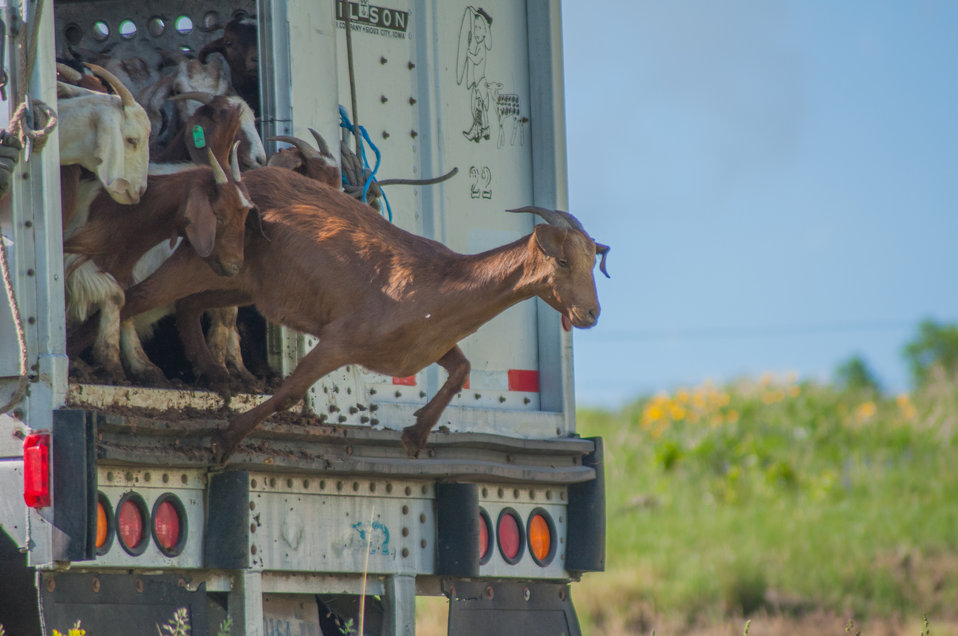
Goat landing on Bozeman Fish Technology Center

On June 8 at 5:00 p.m., 409 yearling domestic goats were off-loaded on the Bozeman Fish Technology Center (BFTC) campus. Thus begins a 3-4 year project of monitored targeted grazing and applications of friendly insects to control noxious weeds and manage brush overgrowth on property of the U.S. Fish and Wildlife Service BFTC.

Purposes of this effort are to reduce the presence of undesirable vegetation, promote restoration of native plants, and assist with fire protection by reducing burnable plant biomass.

The cooperative venture involves the U.S. Fish and Wildlife Service, Montana Outdoor Science School, Friends of the Bozeman Fish Technology Center, Gallatin Valley Land Trust, U.S. Forest Service, and Prescriptive Livestock Services. Integrated Weed Control is supplying the insects as an in-kind contribution to the project, and has applied insects on the BFTC’s 'hot spots' in previous years.